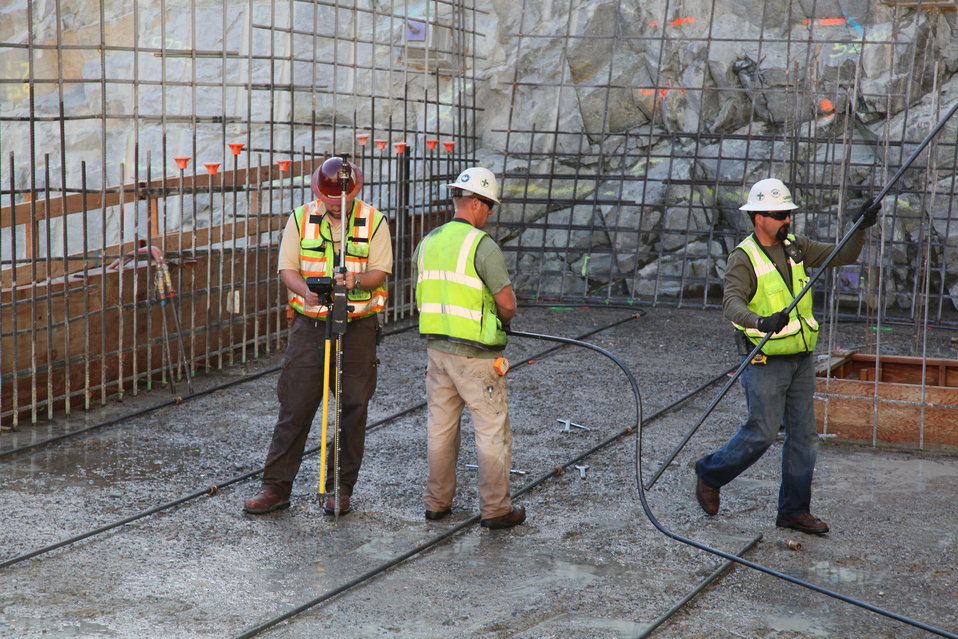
Rebar, Concrete Cooling and GPS

Contractors for the U.S. Army Corps of Engineers Sacramento District construct a tubular water cooling system for concrete placement (right) and collect GPS information for the auxiliary spillway at the Folsom Dam Joint Federal Project in Folsom, Calif., June 20, 2012. The project is a joint effort of the Corps, U.S. Bureau of Reclamation, the Central Valley Flood Protection Board and the Sacramento Area Flood Control Agency to improve the safety of the current dam and reduce flood risk for the greater Sacramento area.